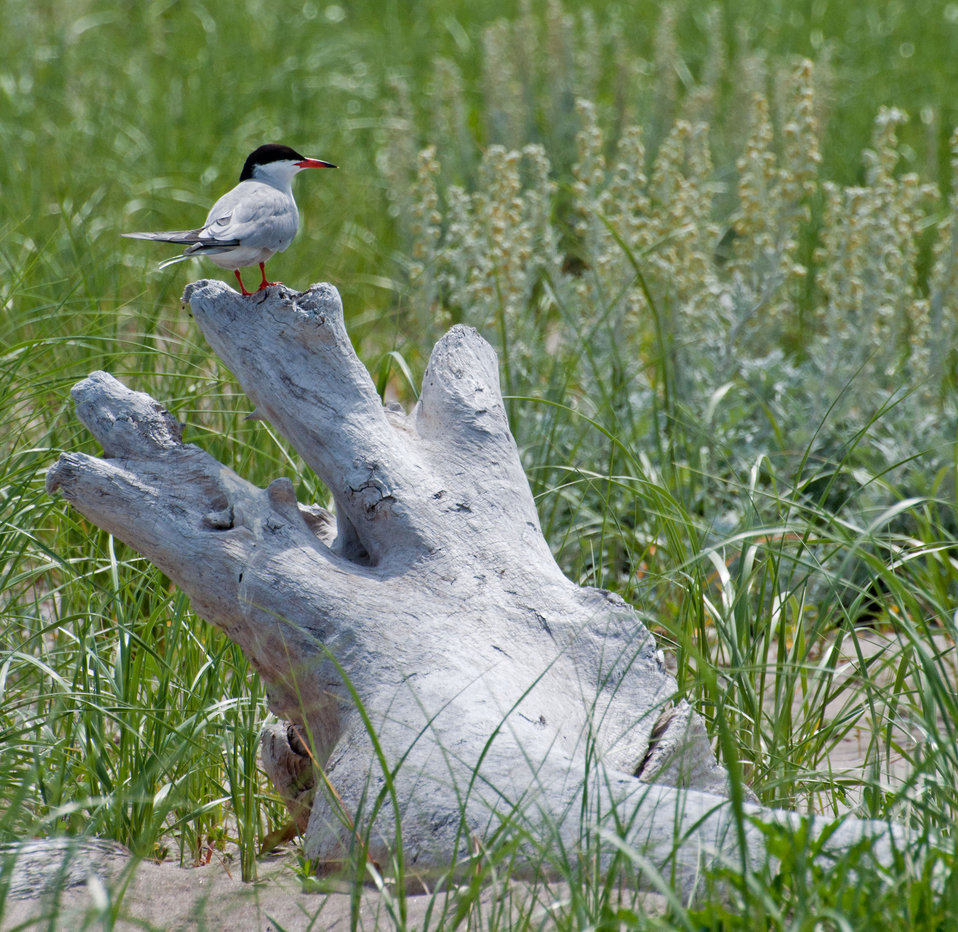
Tern

Parker River National Wildlife Refuge, MA.